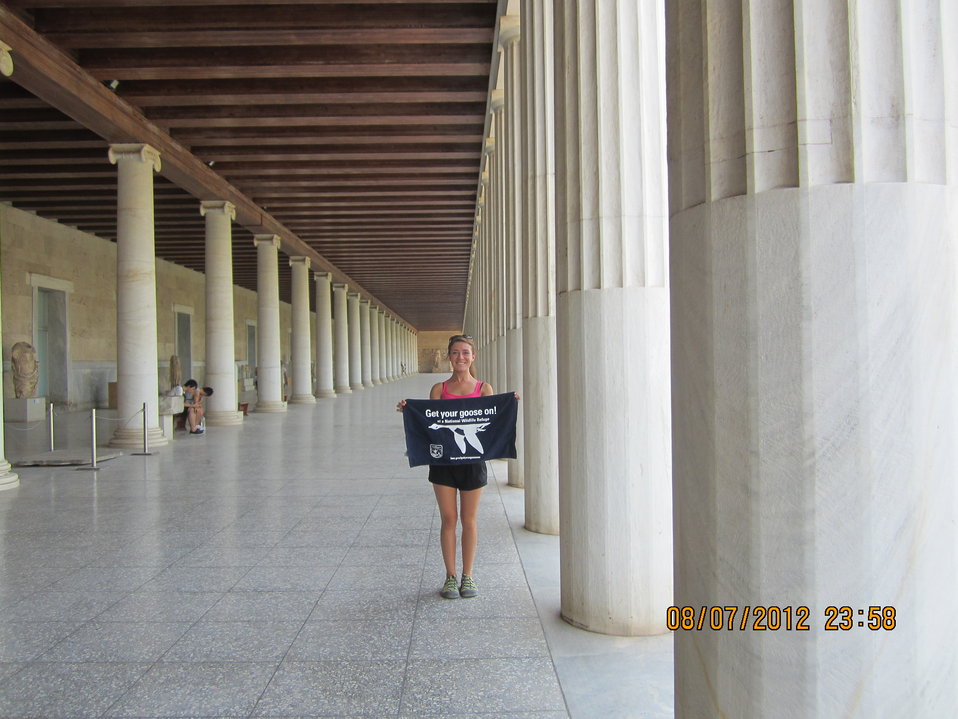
Get Your Goose On! - Parthenon Style!